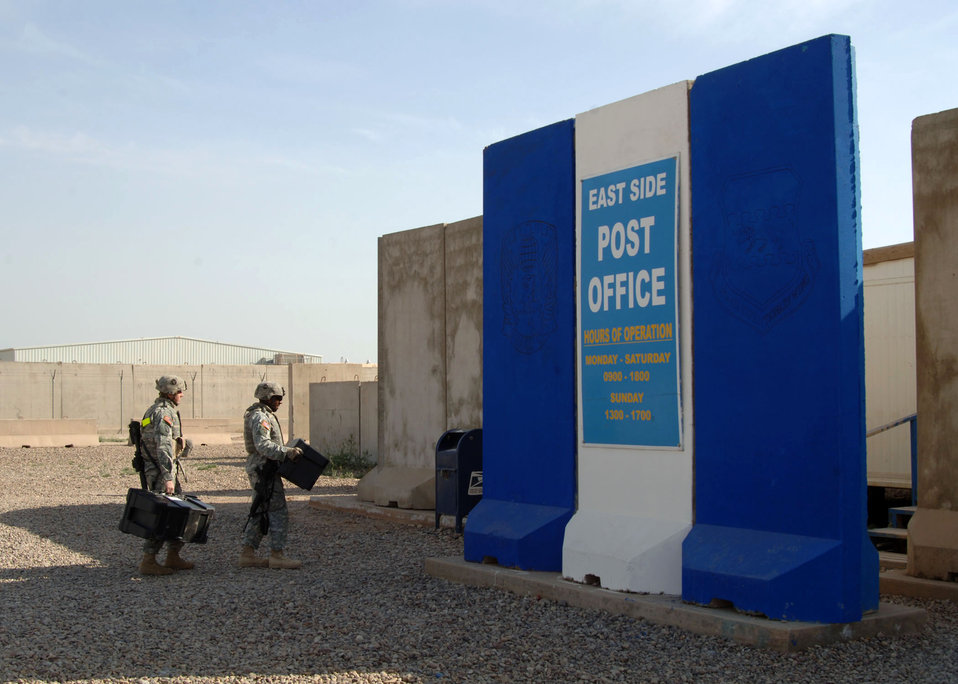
Airmen provide 1st class postal service to thousands

Two Soldiers enter the East Side Post Office April 17 at Balad Air Base, Iraq. The three postal facilities on Balad/Anaconda are responsible for more than 325,000 pounds of incoming and 85,000 pounds of outgoing mail each week, serving an average of 1,800 customers. Every day, two aircraft are used to deliver and pick up an average of 18 pallets of mail.